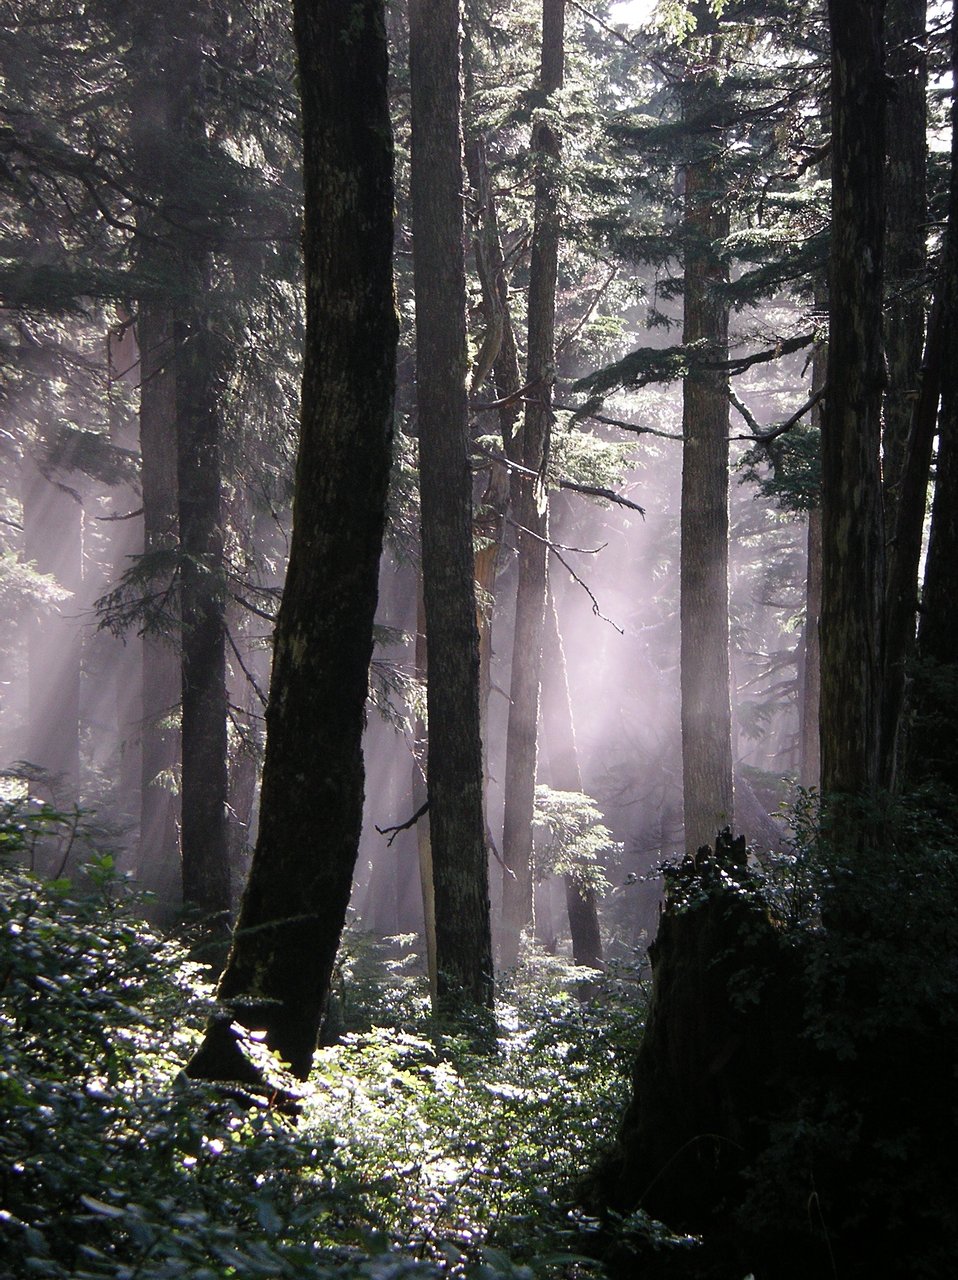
Mist, sunbeams, and giant trees.